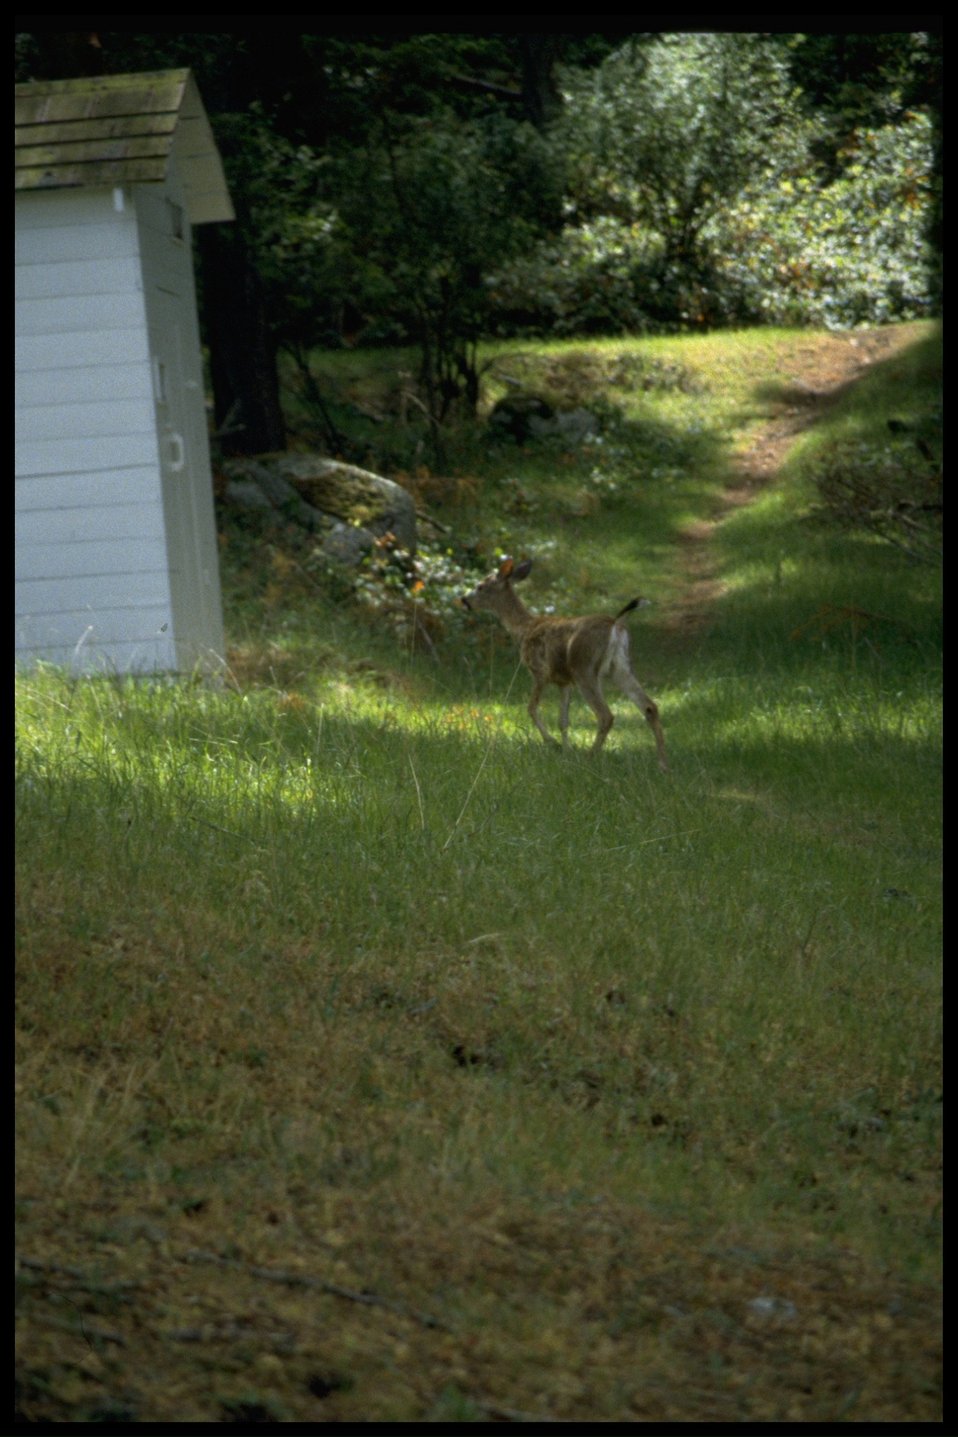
Deer behind the Turn Point living quarters.